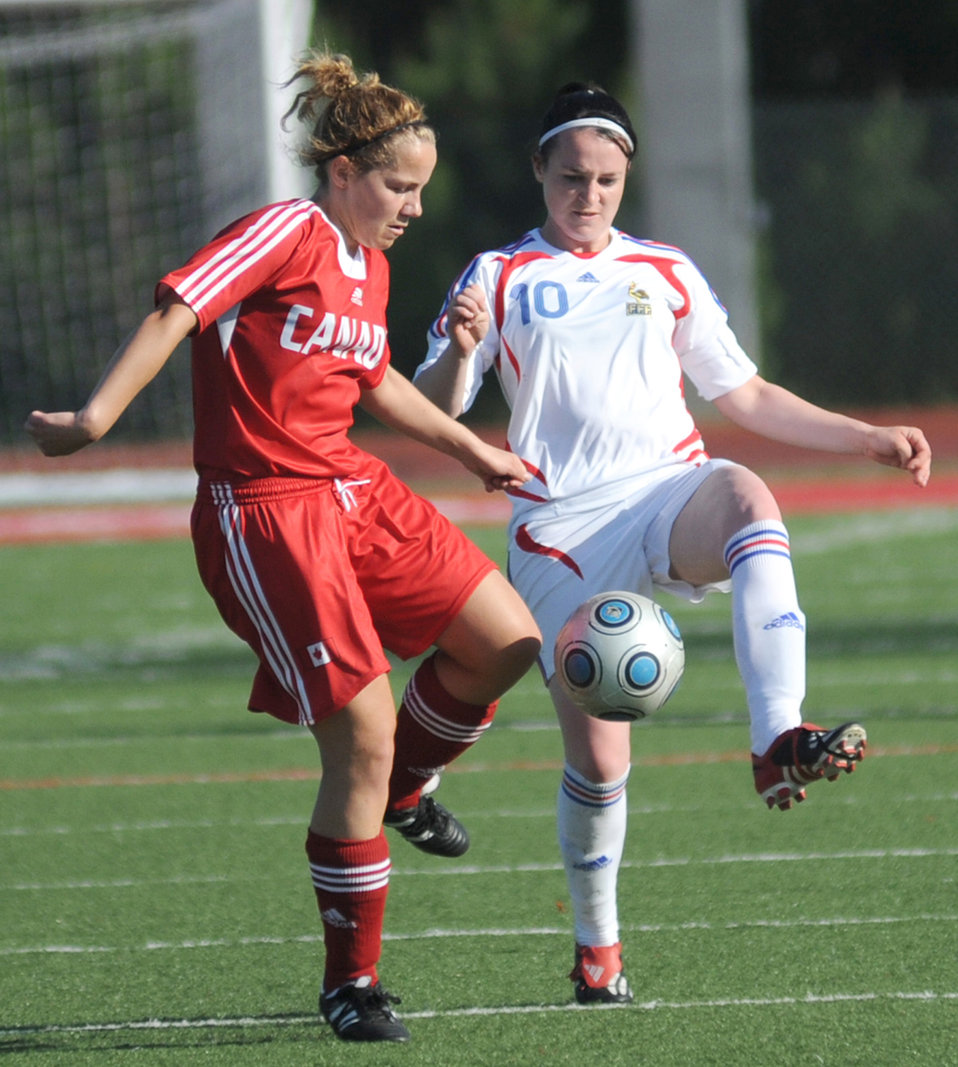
Keesler officials host Women's Soccer Championship

Soccer players from Canada and France compete during the 5th Counseil Du International Sports Militaire Women's Soccer Championship at Biloxi High School Stadium June 7 in Mississippi. The CISM tournament, hosted by officials from Keesler Air Force Base, Miss., includes teams from Brazil, Canada, France, Germany, The Netherlands, South Korea and the United States.